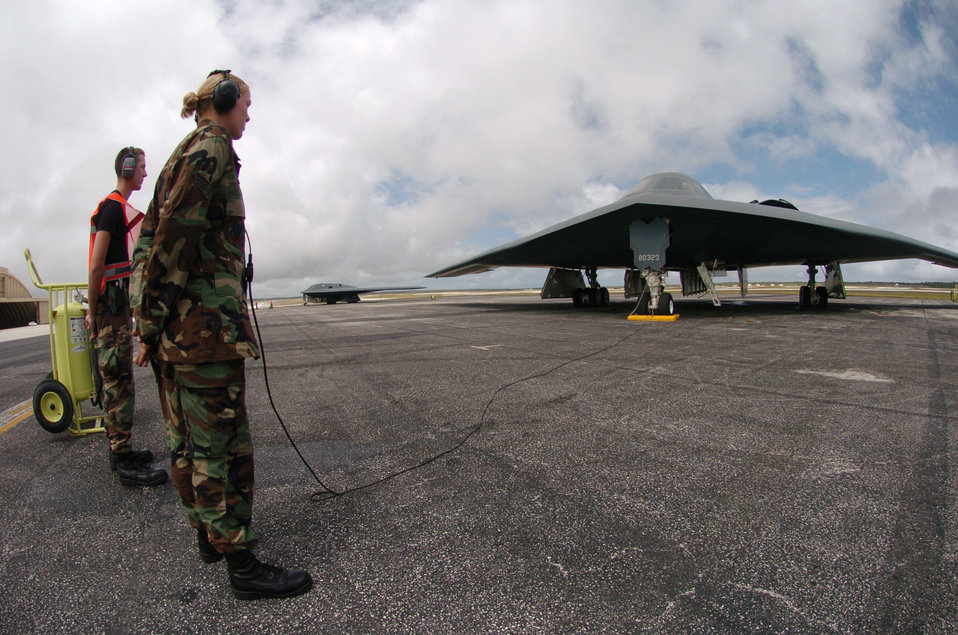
Airmen help improve B-2 aircraft maintenance in Guam

ANDERSEN AIR FORCE BASE, Guam -- Senior Airman Mindy High (foreground) and Airman 1st Class Dustin Spring prepare to launch a B-2 Spirit bomber during a mission here. The B-2s deployed here Feb. 25 to provide U.S. Pacific Command officials a continuous bomber presence in the Asia-Pacific region, enhancing regional security and the U.S. commitment to the Western Pacific. Bomber aircraft have had an ongoing presence on the island since February 2004. The Airmen are crew chiefs from the 509th Bomb Wing at Whiteman Air Force Base, Mo.